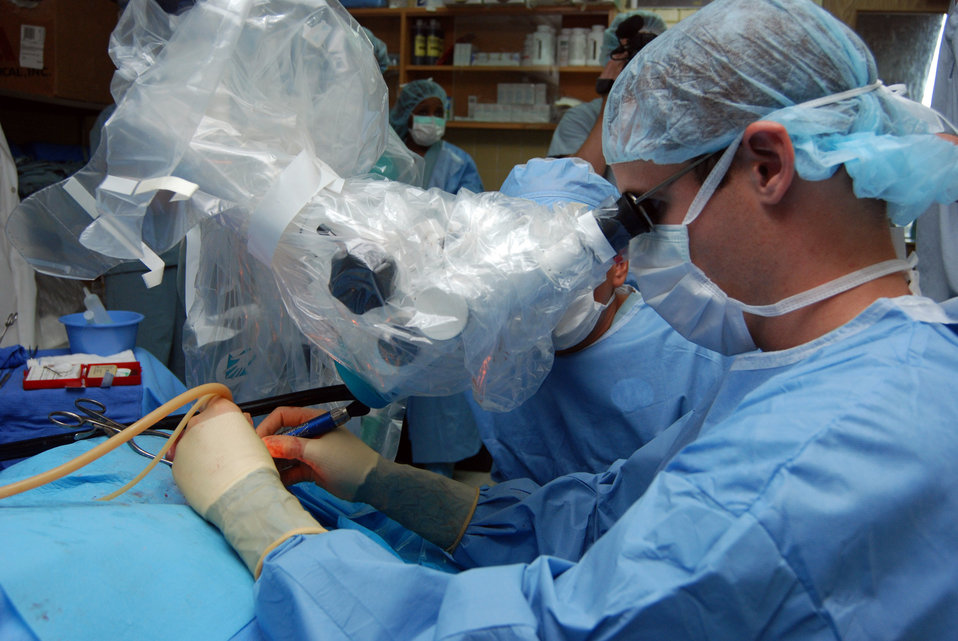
Wilford Hall team treats ENT patients in Honduras

Capt. (Dr.) Luke Arnholt performs ear surgery on a patient June 17 at Hospital Escuela in Tegucigalpa, Honduras. A 14-person team from Wilford Hall Medical Center in San Antonio, Texas, did more than 240 patient evaluations and more than 40 surgeries during a two-week readiness training mission to the hospital. Captain Arnholt is an ear, nose and throat surgeon at WHMC.